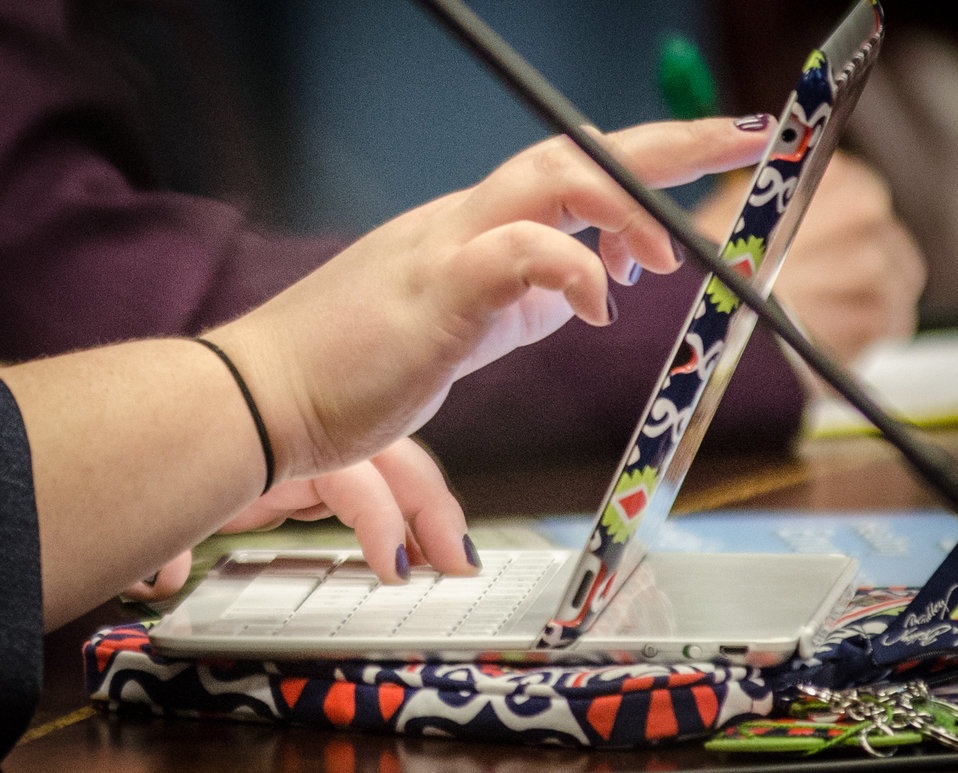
Farm broadcasters take note of what Agriculture Secretary Tom Vilsack says to them during a meeting at the U.S. Department of Agriculture (USDA) on Tuesday, May 14, 2013, in Washington, D.C.